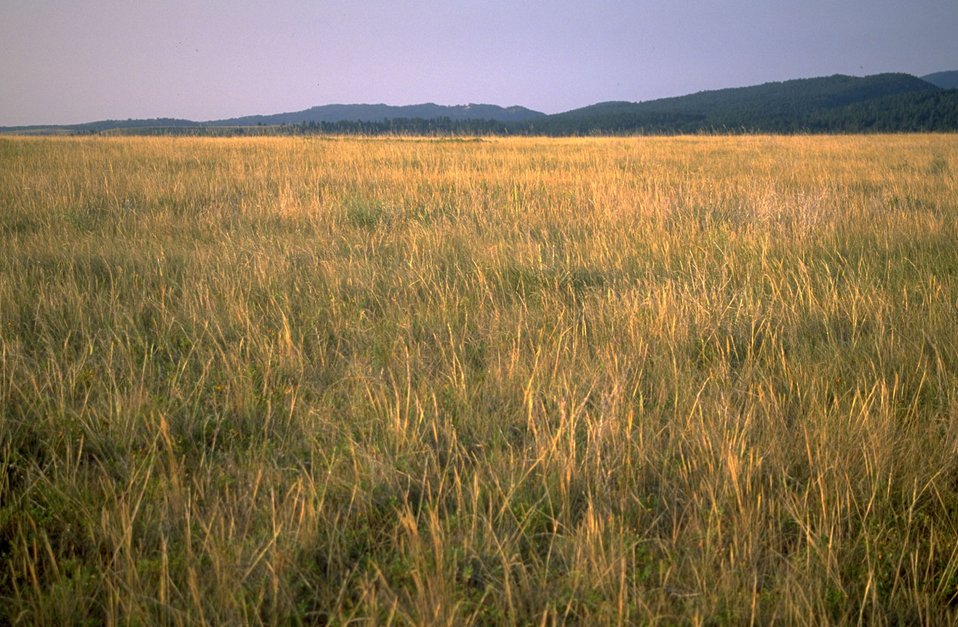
Grassland Vista at the north end of Fort Meade